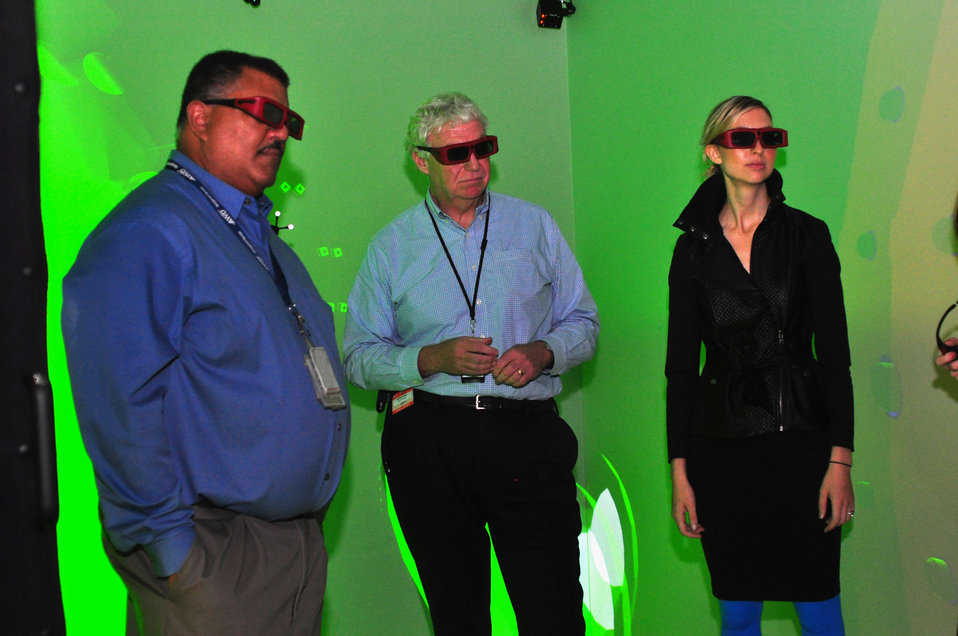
Leon Duquella DOE ORO Oak Ridge Emergency Management Forum Chair, Richard Serino Deputy Administrator, FEMA and Desiree Matel-Anderson Chief Innovation Advisor, FEMA Visit to Oak Ridge 2013

13-116-153 DOE photo Lynn Freeny 9-26-2013 Oak Ridge Tennessee